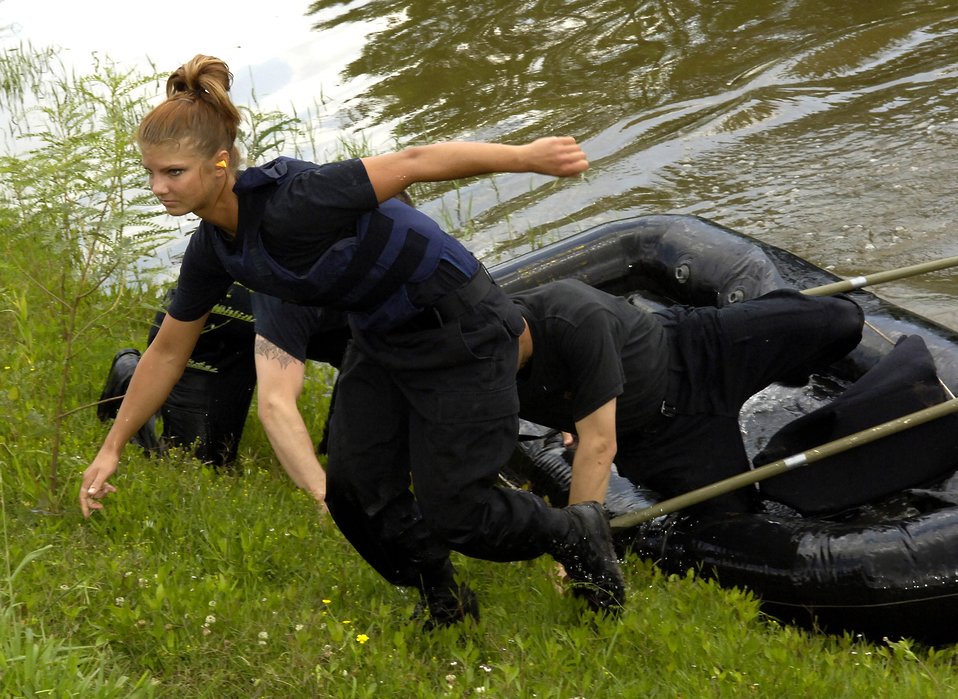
Security forces Airmen at SWAT competition

Airman 1st Class Gina Manning jumps out of a raft after racing across a pond during a timed event at the Louisiana State SWAT Team Competition in Alexandria, La., on Tuesday, May 2, 2006. Airman Manning is with the 2nd Security Force Squadron at Barksdale Air Force Base, La.